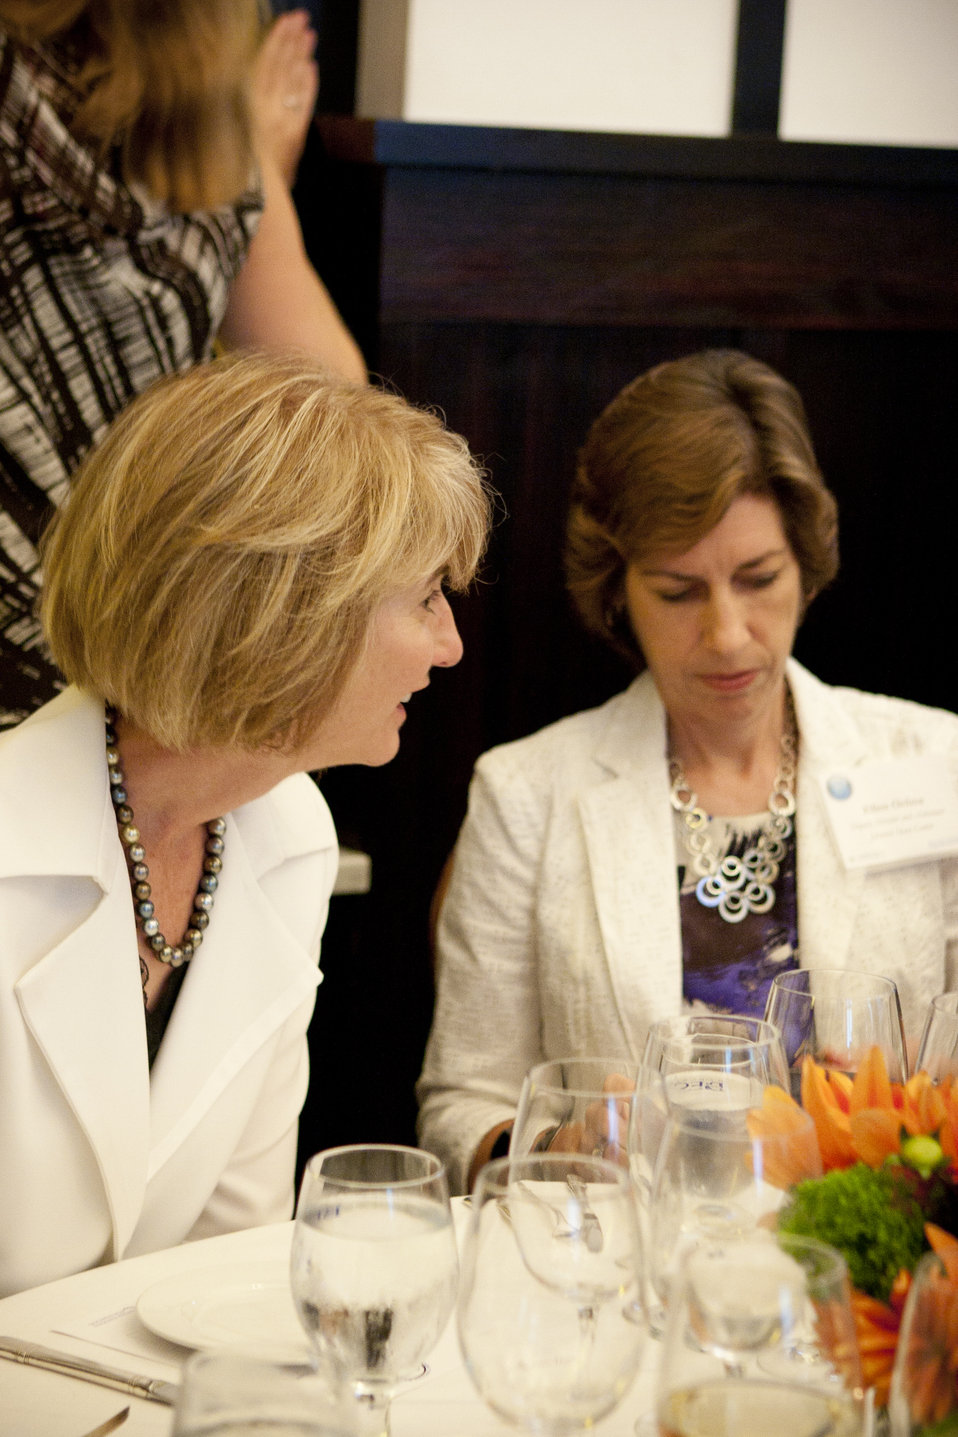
WomenandEnergy 56